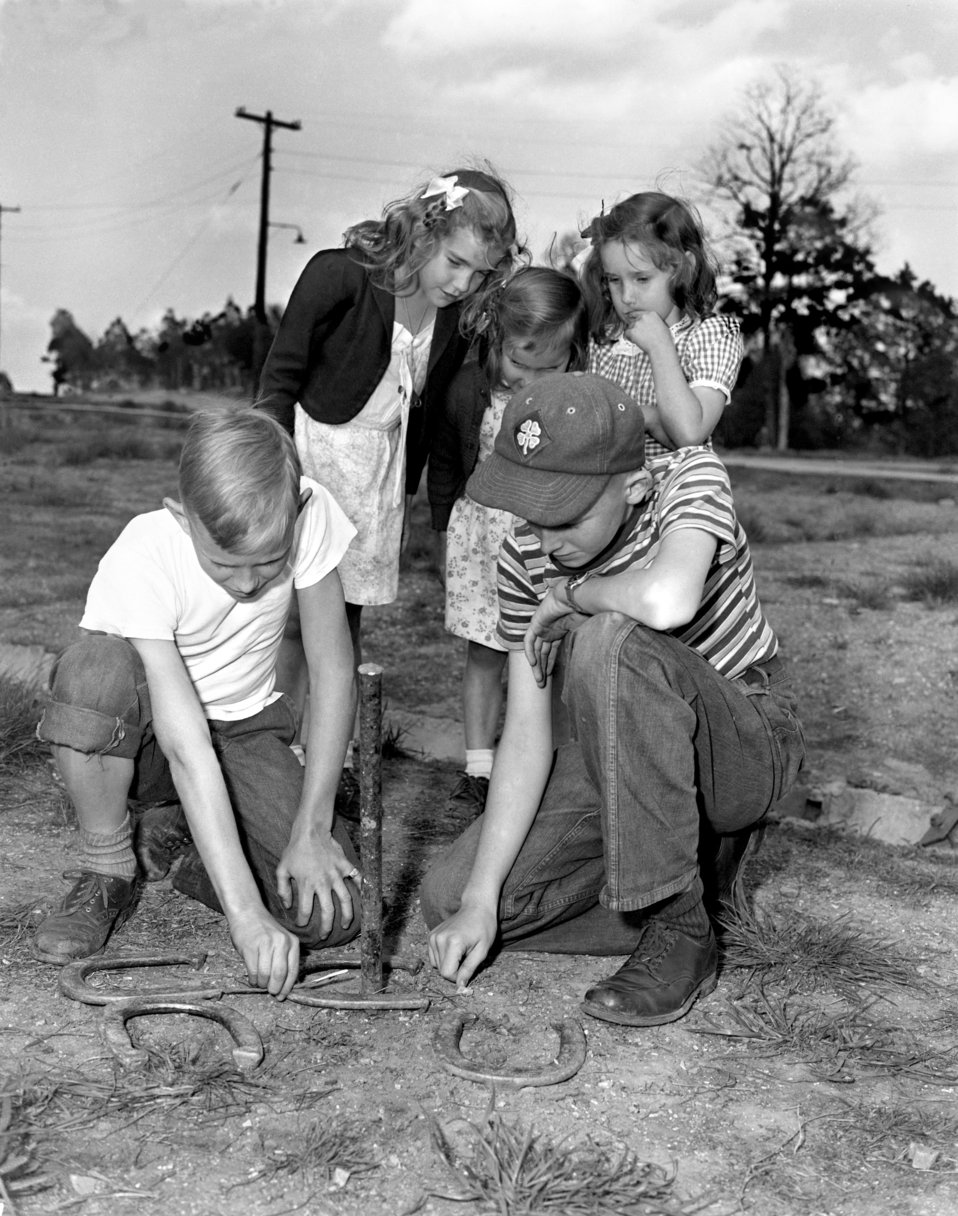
Children Playing Horse Shoes Oak Ridge 1947

3414-12ab DOE photo Ed Westcott 4-17-1947 Oak Ridge Tennessee